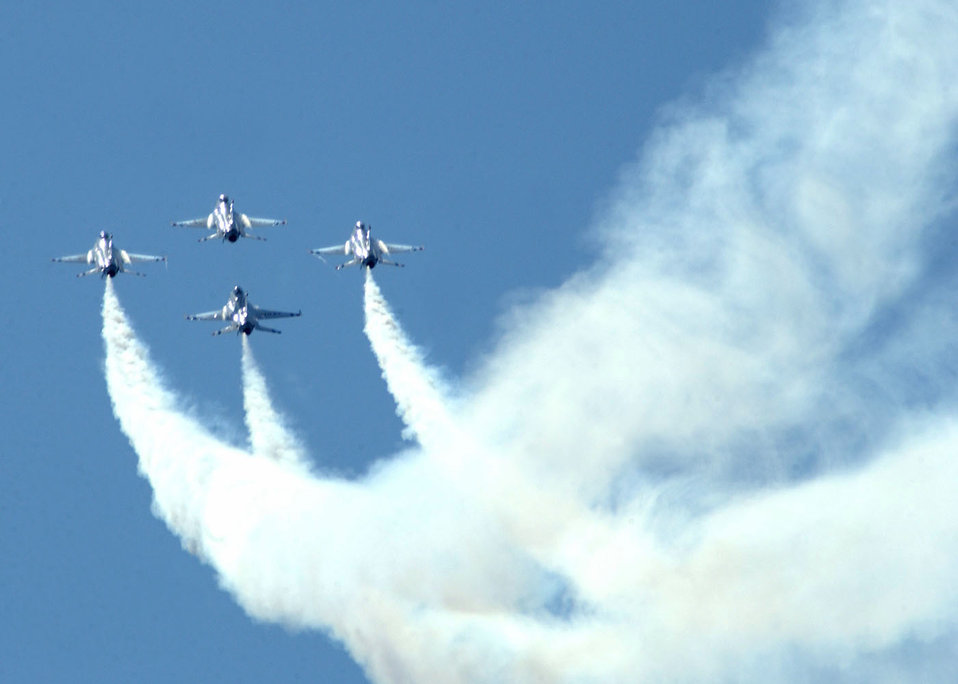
Thunderbirds in the sky

OVER ELLSWORTH AIR FORCE BASE, S.D. - The U.S. Air Force Demonstration Team